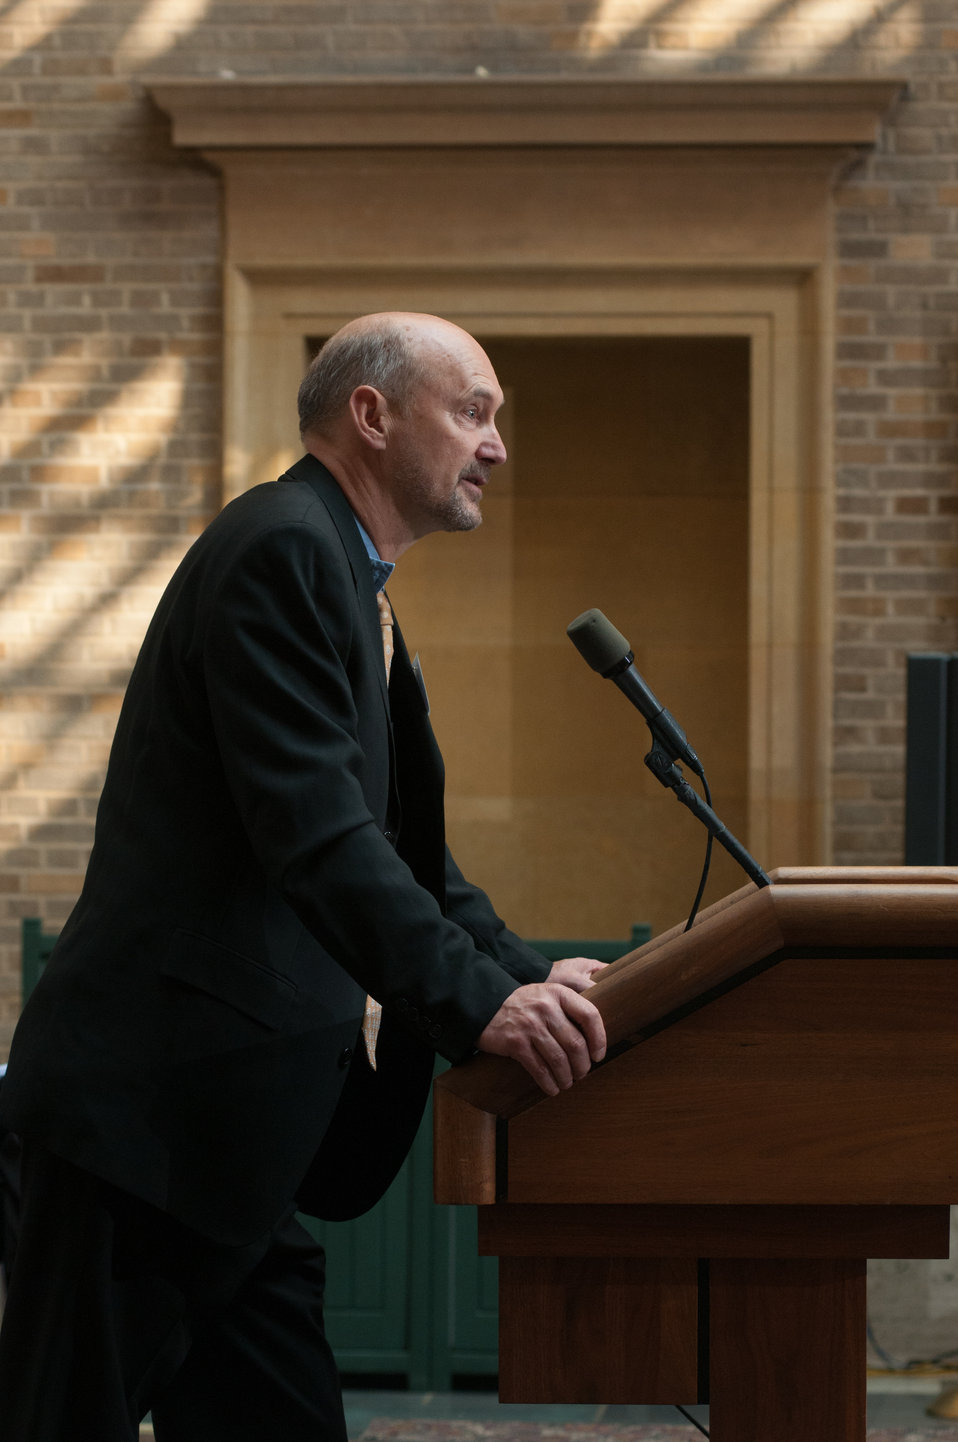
Alliance for Green Heat, President John Ackerly, speaks during the U.S. Department of Agriculture (USDA) Wood Energy Memorandum of Understanding, and awarded wood energy grants announcements event, at the USDA Headquarters, in Washington, D.C., on Wednesday, September 11, 2013. Signing the MOU are partnership leaders Biomass Thermal Energy Council, Executive Director Joseph Seymour; Alliance for Green Heat, President John Ackerly, USDA Agriculture Deputy Secretary Krysta Harden; Pellet Fuels Institute Executive, Director Jennifer Hedrick; Biomass Power Association, President and CEO Bob Cleaves, and Secretary Thomas Vilsack who signed it earlier. Moderating the event is Under Secretary for Rural Development Doug O’Brien.
The partnership agreement focuses on promoting wood energy nationwide as a means to address fire risks, bolster rural economic development, improve air quality, and help meet the Obama Administration’s renewable energy and energy efficiency goals. These organizations support the use of wood energy across the scale of users – from residential users, to commercial and intuitional facilities, to industrial production of heat and or electricity to drive businesses and feed the electrical grid.
Under the terms of the five grants announced by Deputy Secretary Harden, private, state and federal organizations will work together to stimulate the development of additional wood energy projects in their states. Collectively, $2.9 million will be spent o this effort -- $1.1 million on federal funds and $1.8 million in non federal funds. For more information o0n the cooperative agreement program, visit na.fs.fed.us.werc/wood-energy/ USDA Photo by Lance Cheung.